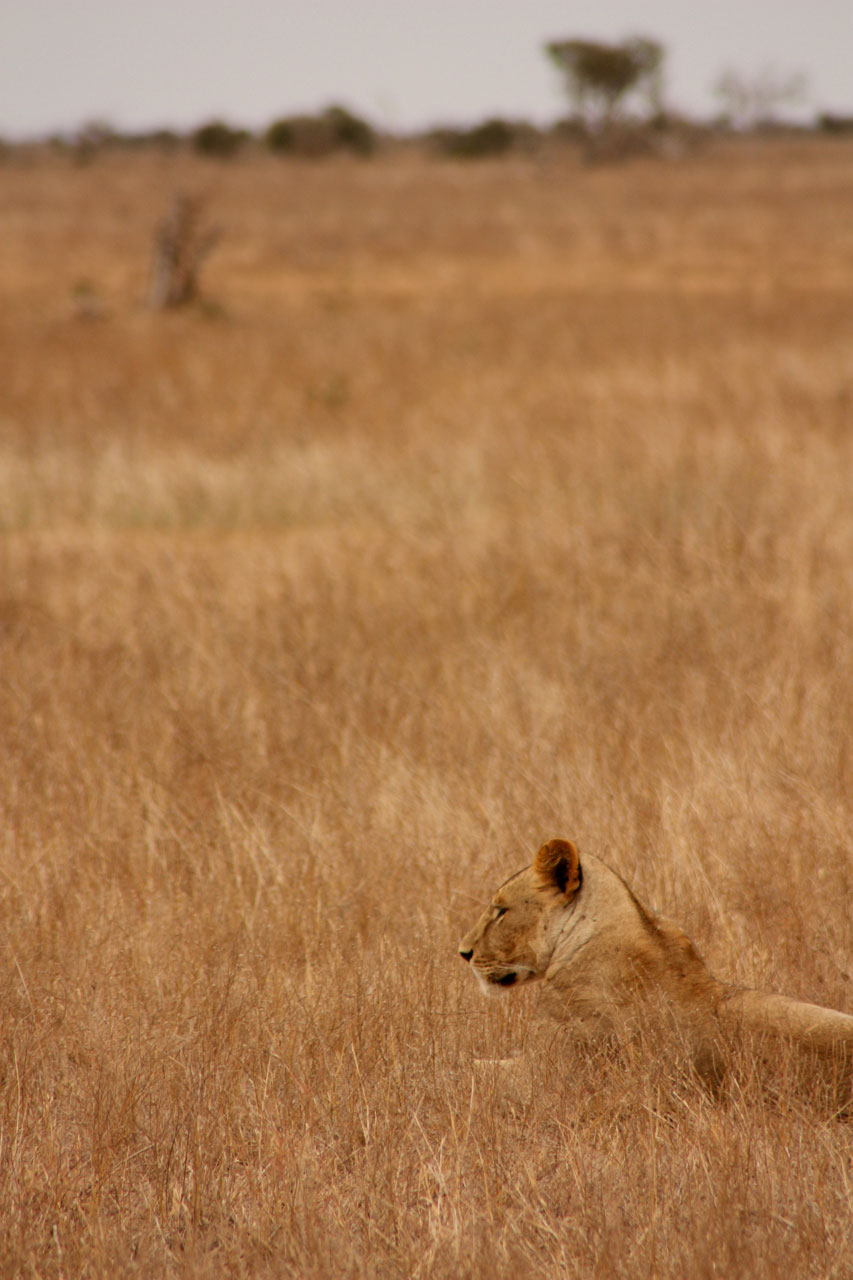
Lions in tsavo.